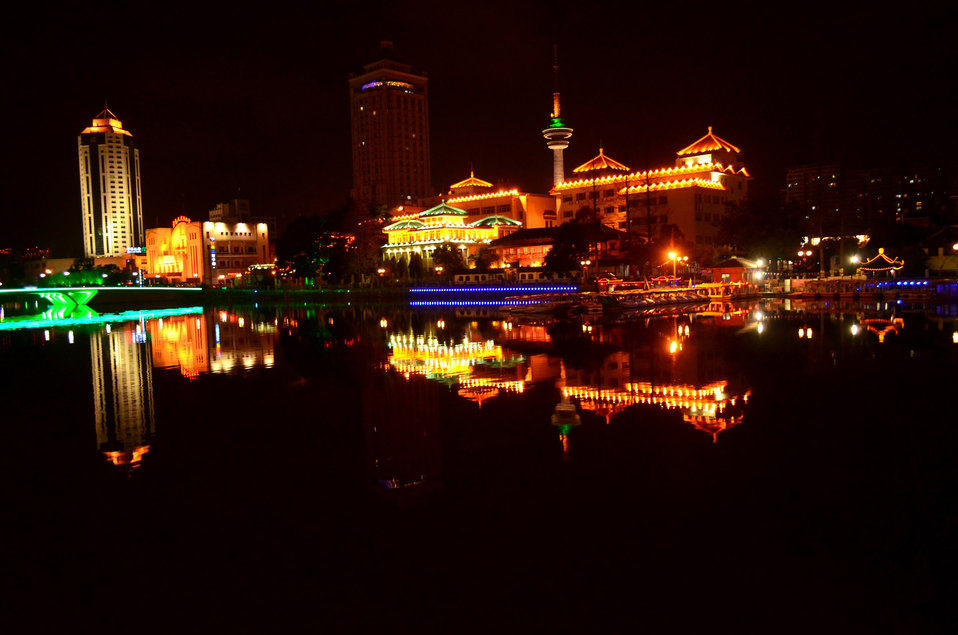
Night in nantong

Nantong, china night scene.